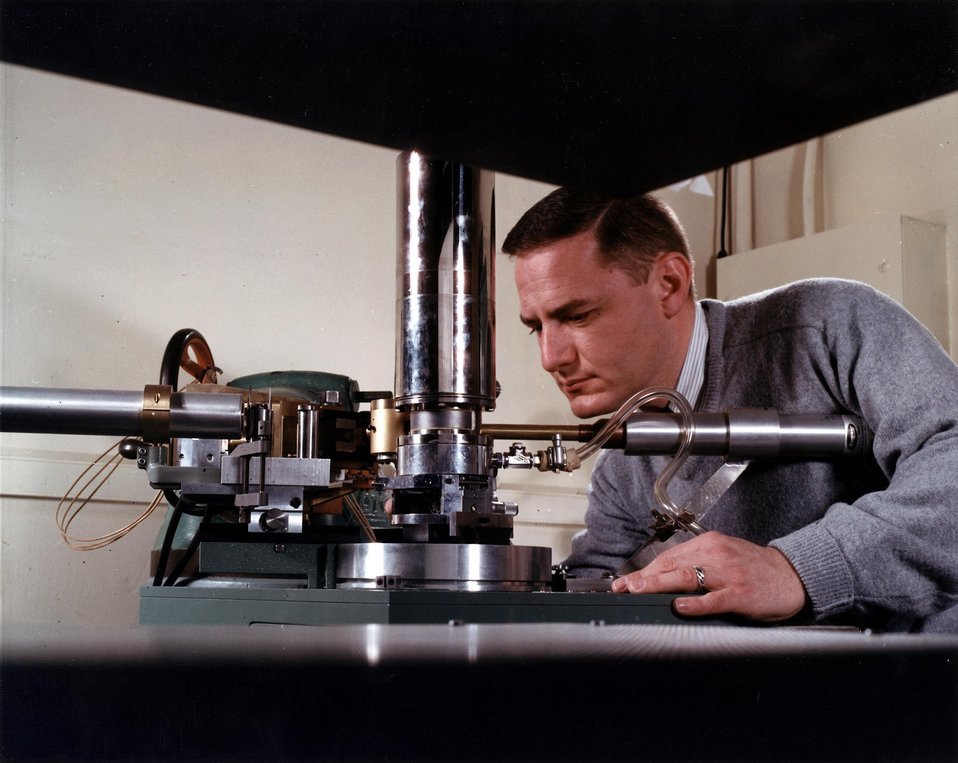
A single crystal of holmium is aligned in the x-ray beam preparatory to low temperature runs at 77 degrees and 23 degrees Kelvin. Monochromatic x-rays reflected from a doubly bent lithium fluoride crystal are directed upon the holmium crystal inside the evacuated beryllium windowed cryostat. c. 1967